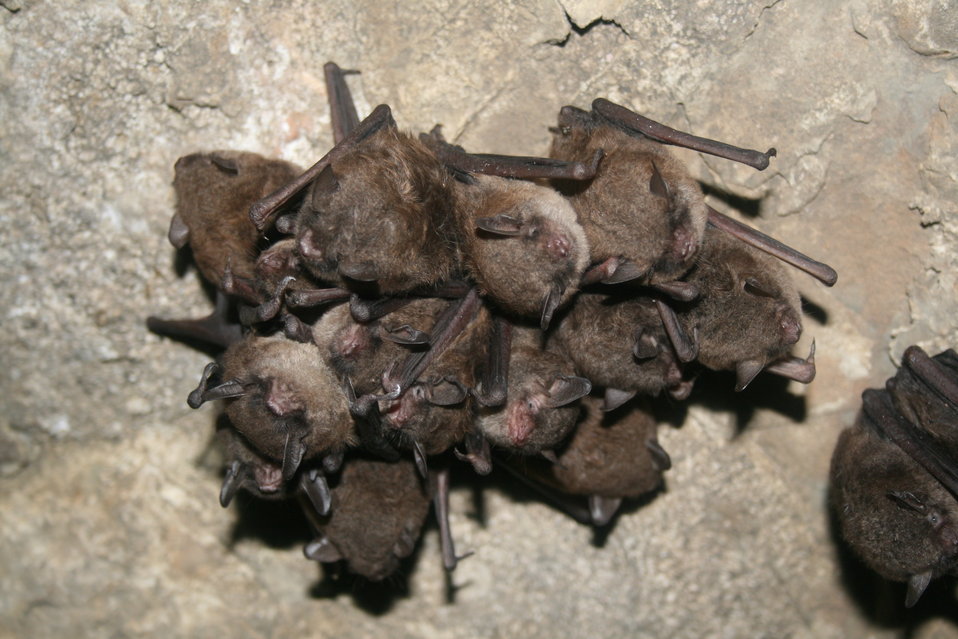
Hibernating bats